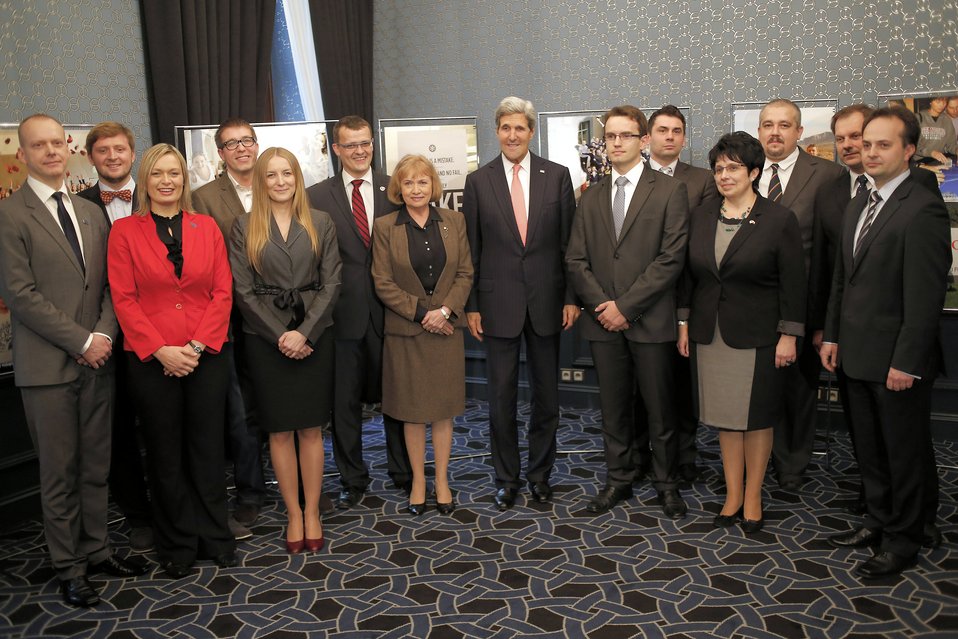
Secretary Kerry Meets With Alumni From the Polish Ministry of Science and Higher Education’s Top 500 Innovators Program

U.S. Secretary of State John Kerry meets with alumni from the Polish Ministry of Science and Higher Education’s Top 500 Innovators program in Warsaw, Poland, on November 5, 2013.